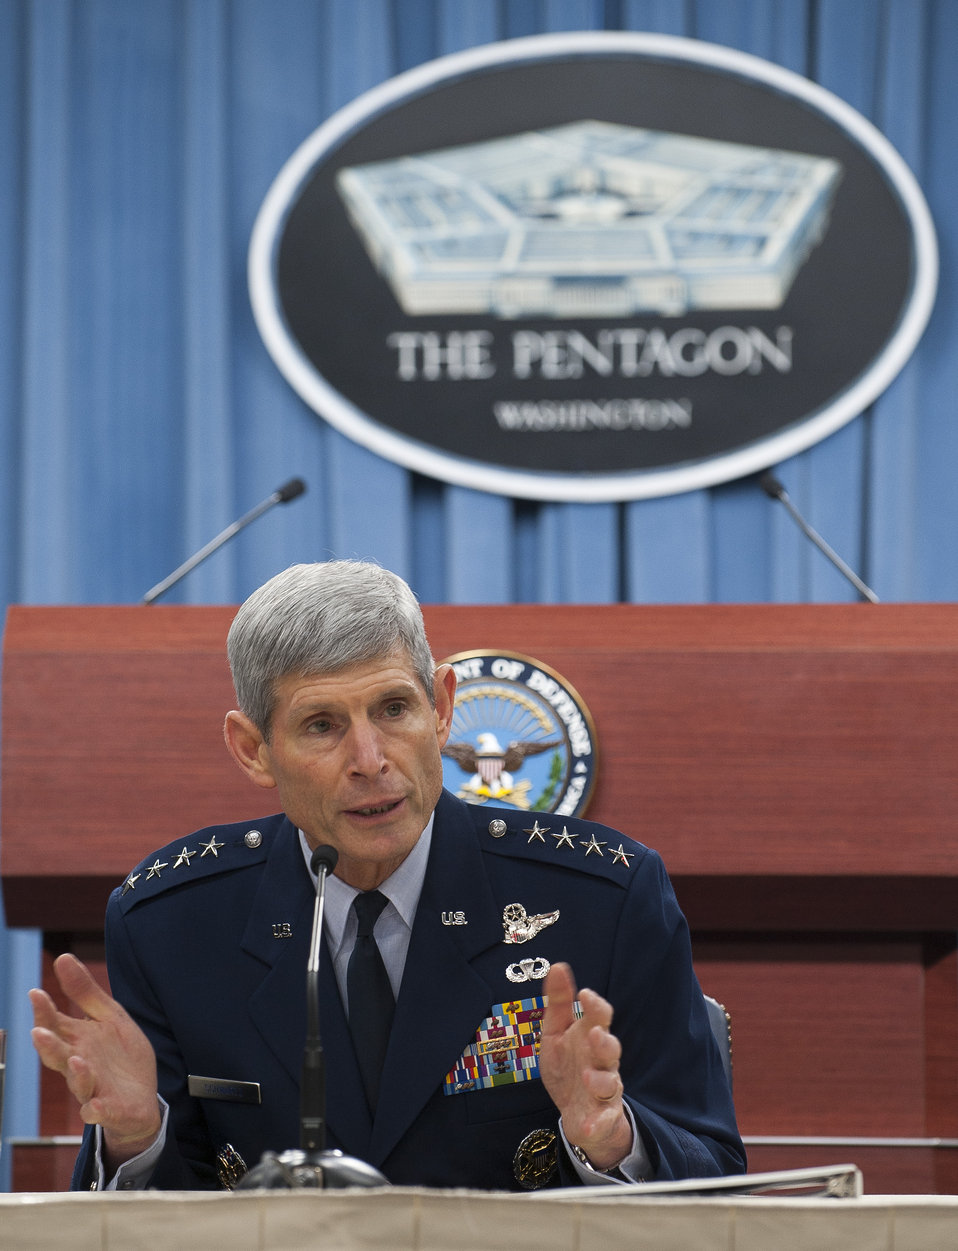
Gen. Schwarts comments on F-22 hopxia-related incidents

Air Force Chief of Staff Gen. Norton Schwartz responds to questions in the Pentagon on July 24, 2012, to discuss Air Force accomplishments during his time as Chief of Staff. Schwartz also spoke about data indicating the cause of the F-22 Raptor's hypoxia-related incidents.